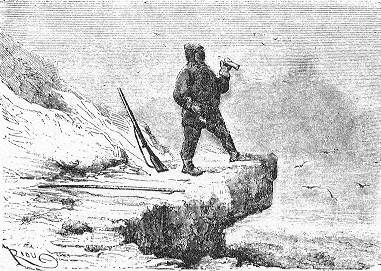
An illustration from Jules Verne's novel 'Journeys and Adventures of Captain Hatteras', part II: 'The Field of Ice' drawn by Édouard Riou and/or Henri de Montaut. Polski: Ilustracja powieści Juliusza Verne'a 'Podróże i przygody kapitana Hatterasa', części II: 'Pustynia lodowa' autorstwa Édouarda Riou i/lub Henri de Montauta. Français : Jules Verne: 'Voyages et aventures du capitaine Hatteras - Le désert de glace', Édouard Riou et Henri de Montaut.